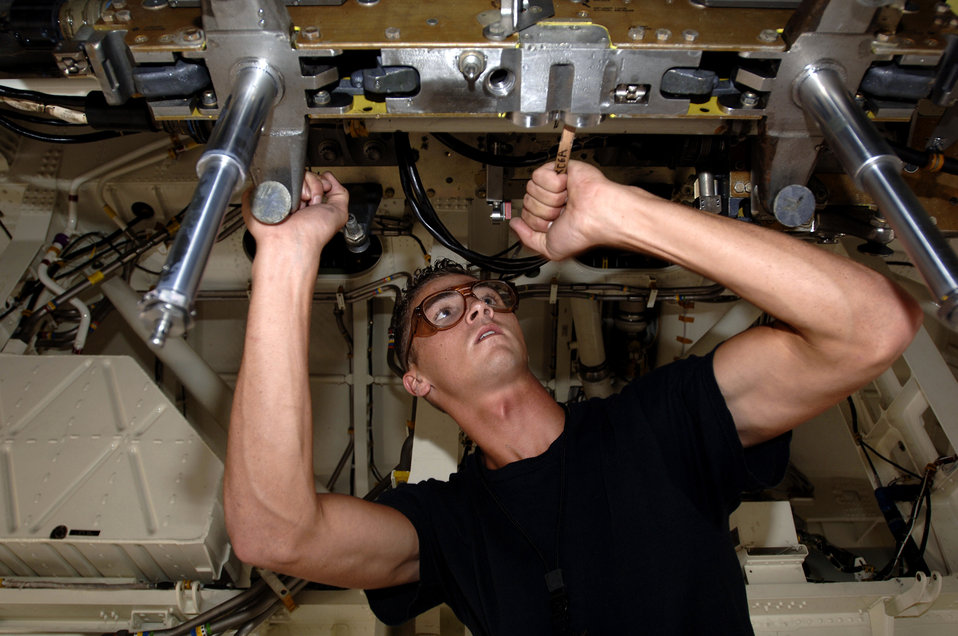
Clean Spirit

ANDERSEN AIR FORCE BASE, Guam-- Senior Airman Bryan Taggard removes carbon scoring during an inspection on a B-2 Spirit here June 30. He is a maintenance craftsman with the 36th Expeditionary Aircraft Maintenance Squadron.